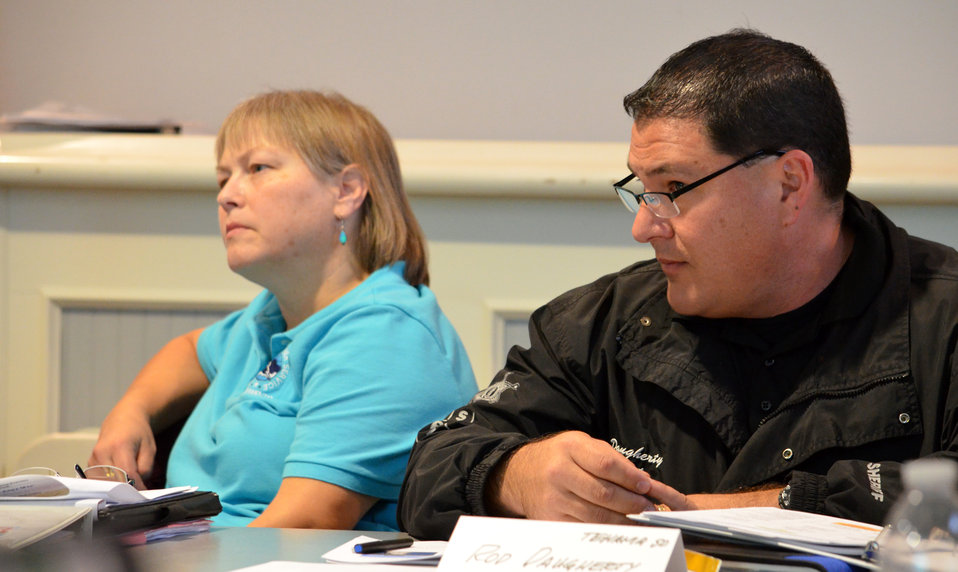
Orland emergency response exercise

Cindy Matthews, National Weather Service, and Rod Daugherty, Tehama County Sheriff’s Office, participate in a desktop exercise simulating a flood event in the Stony Creek Basin of northern California. The U.S. Army Corps of Engineers Sacramento District joined local, state and other federal agencies in Orland, Calif., Nov. 20, to practice emergency response coordination for use in a regional flood emergency. The desktop exercise provided an opportunity for face-to-face communication between emergency agency personnel.